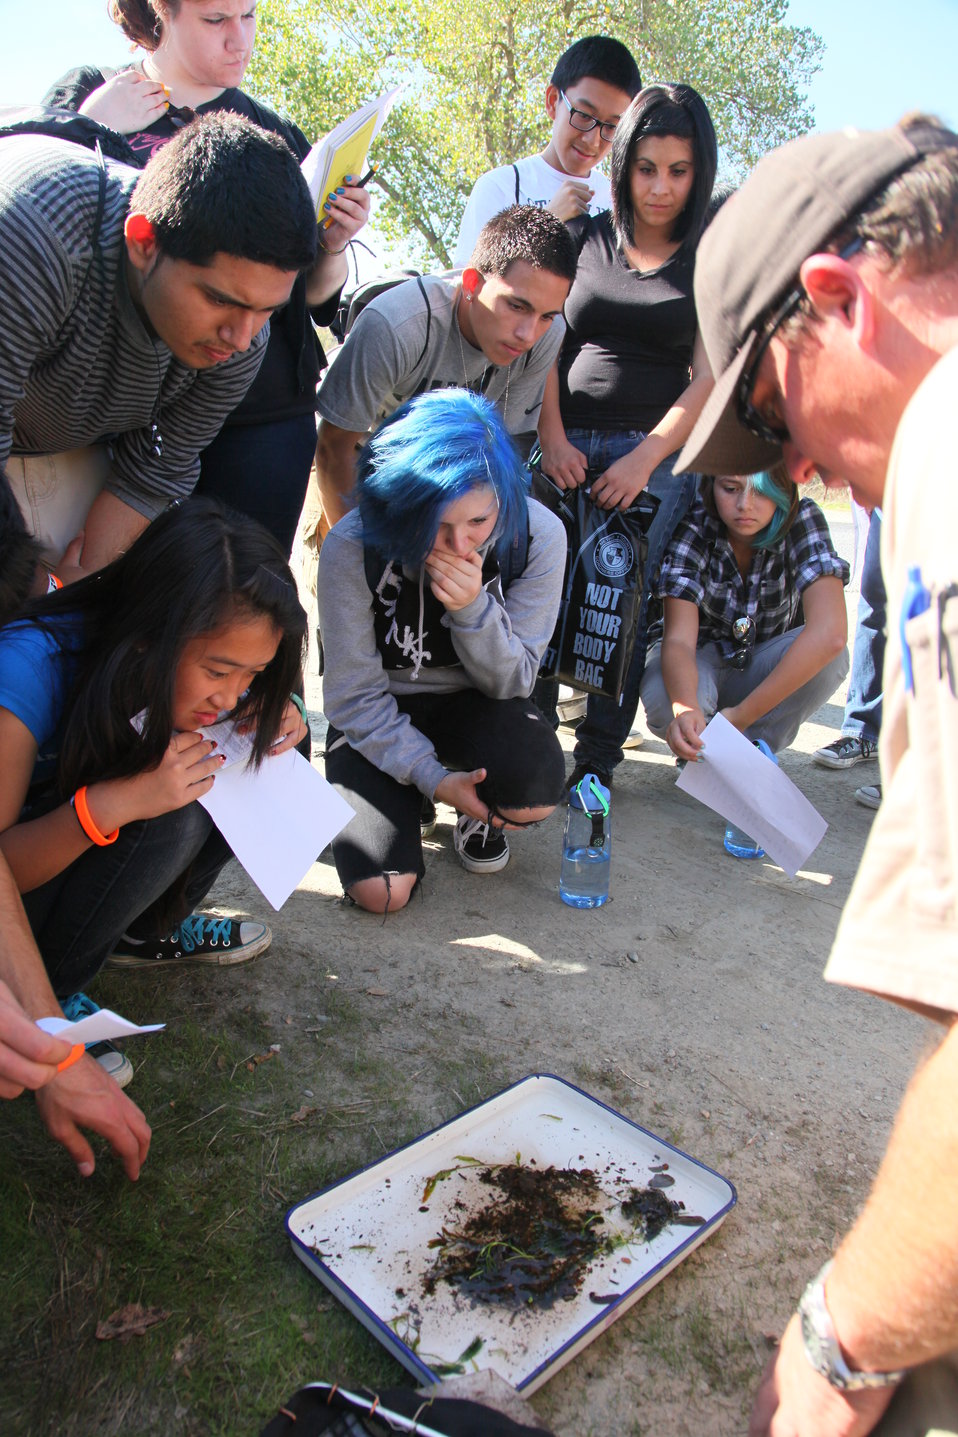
A river full of education

Students from Stagg and Bear Creek high schools of Stockton, Calif., observe Calaveras River samples of aquatic life near New Hogan Dam, Valley Springs, Calif., Oct. 22, 2011. The students, from Stagg and Bear Creek high schools of Stockton, Calif., experienced real life learning through activities including water sampling, aquatic life samples, an underwater video camera and fish habitats as part of the Calaveras River Education and Appreciation Day. The U.S. Army Corps of Engineers Sacramento District helped host the event, in partnership with the U.S. Fish & Wildlife Service’s “Connecting People with Nature” program.